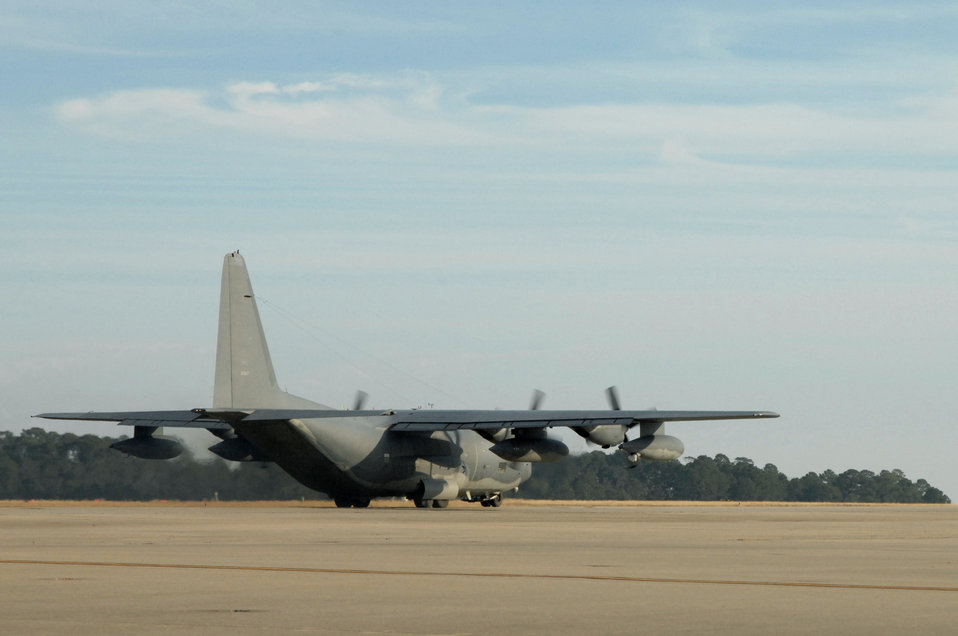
Special operations Airmen deploy to Haiti to provide humanitarian relief

A MC-130H Combat Talon II from the 15th Special Operations Squadron at Hurlburt Field, Fla., departs for Haiti Jan. 13, 2010. Air Force Special Operations Command Airmen will participate in the humanitarian assistance and disaster relief mission in Haiti.